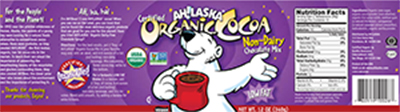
RECALLED – Chocolate mix

April 3, 2014 – Product Recall – Koru Pacific Packaging Announces a Voluntary Recall for One Lot # AH!LASKA® Organic Cocoa Non-Dairy Chocolate Mix, 12 oz. Canister Due to Possible Milk Allergen.